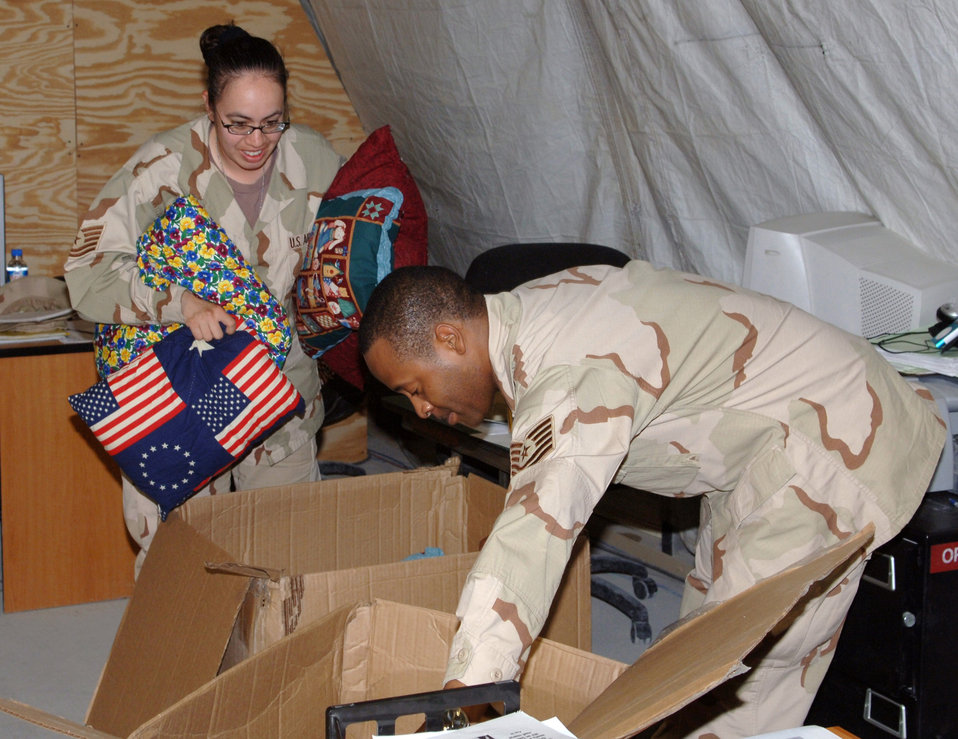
Enduring Freedom with comfort

BAGRAM AIR BASE, Afghanistan -- Tech. Sgts. Vanessa Martinez and Von Payton unpack comfort pillows sent from Junior Girl Scout Troop 376 in Navarre, Fla. The Juniors sent two boxes of pillows here as a way of saying thanks for the selfless sacrifice of Airmen deployed supporting Operation Enduring Freedom. The Airmen are assigned to the 455th Expeditionary Mission Support Group. Sergeant Martinez is deployed from Randolph Air Force Base, Texas, and Sergeant Payton is from Langley AFB, Va.